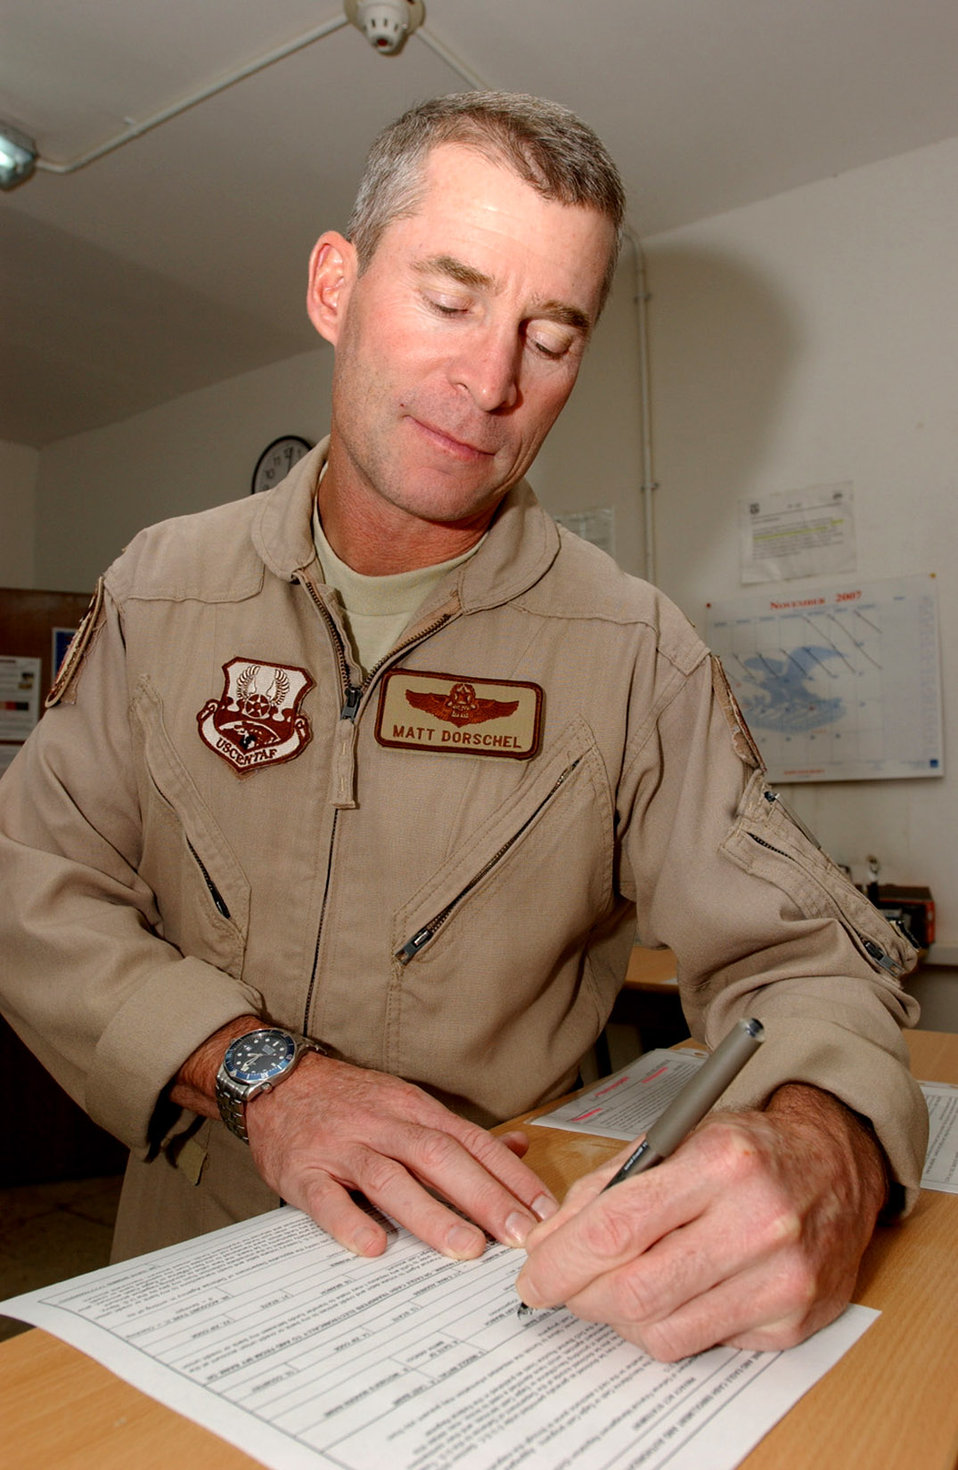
EagleCash lands at Ali Base

Col. Matthew Dorschel signs up for an EagleCash card Nov. 12. at Ali Air Base, Iraq. The base was the last stop for the EagleCash program to be implemented in southern Iraq. The EC program provides instant access to funds electronically which potentially saves lives and thousands of dollars to transport hard currency in the area of responsibility. Colonel Dorschel is the 407th Air Expeditionary Group commander and is deployed from Hickam Air Force Base, Hawaii.